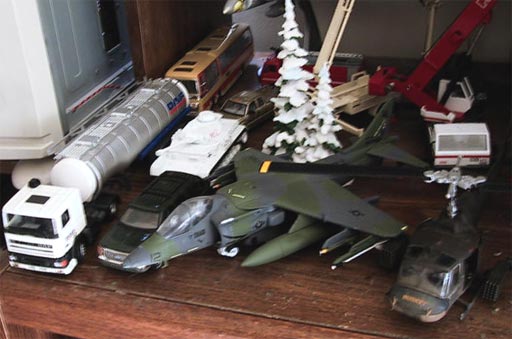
1:50 scale and 1:48 scale metal diecast models together.